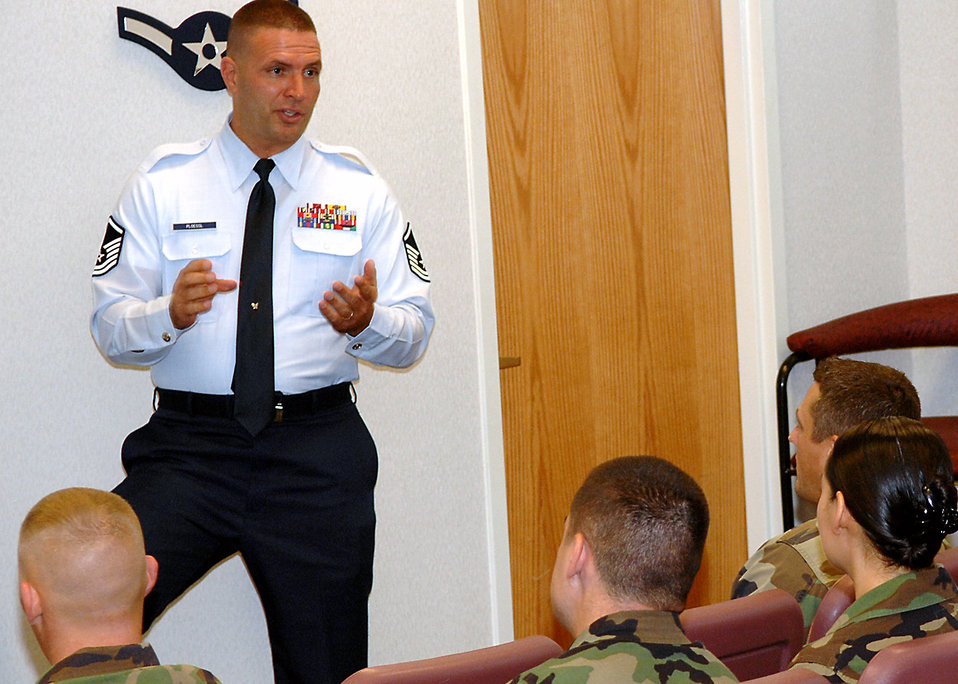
Team seeks Airmen ready for 'something different'

Master Sgt. Craig Poessl shares information about special duty assignments with Airmen at Minot Air Force Base, N.D., August 2007. Team members visit Air Force bases throughout the year to encourage Airmen to serve as recruiters, technical school and basic military training instructors. Sergeant Poessl is an Air Force Recruiting Service Recruiter Screening Team member.